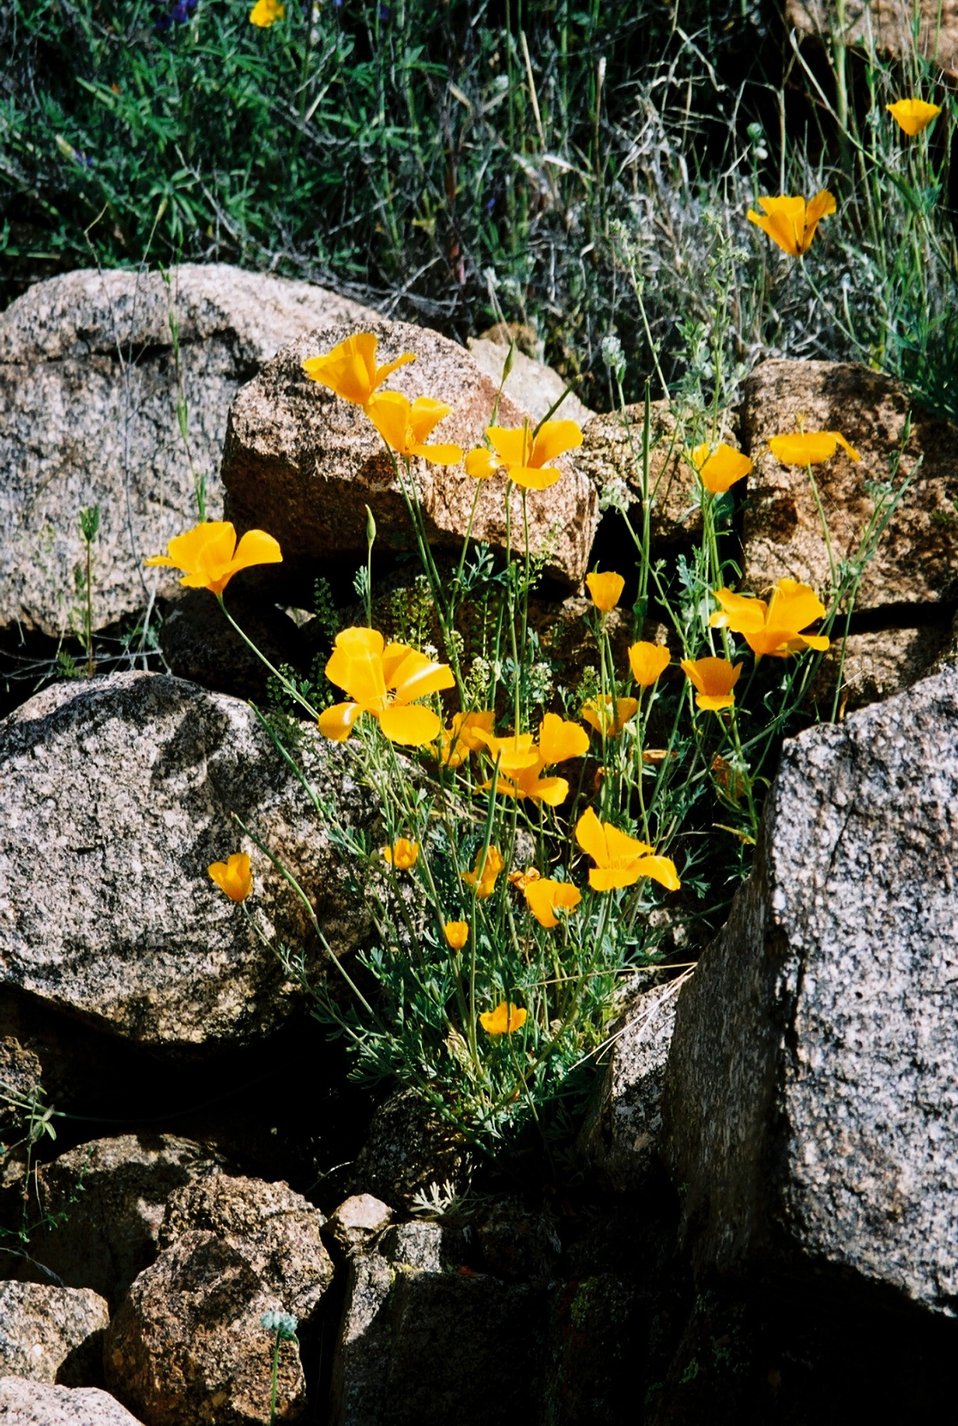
Many different kinds of beautiful wildflowers grow in the Agua Fria National Monument.